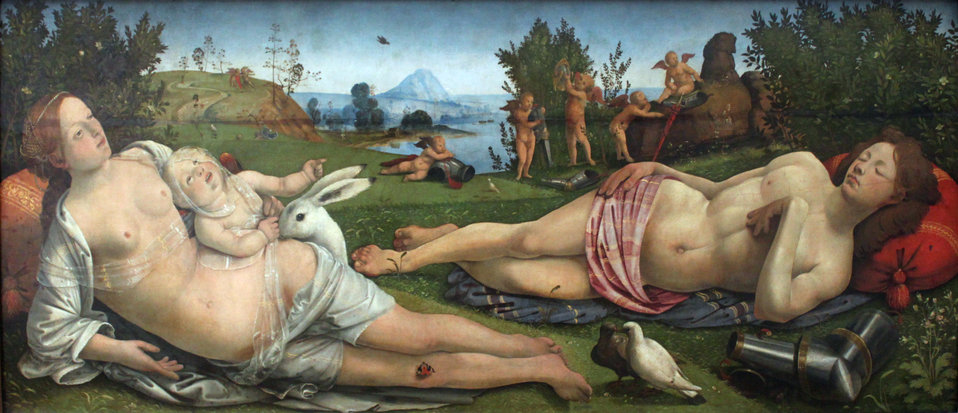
1505 Piero di Cosimo Venus, Mars and Cupid anagoria